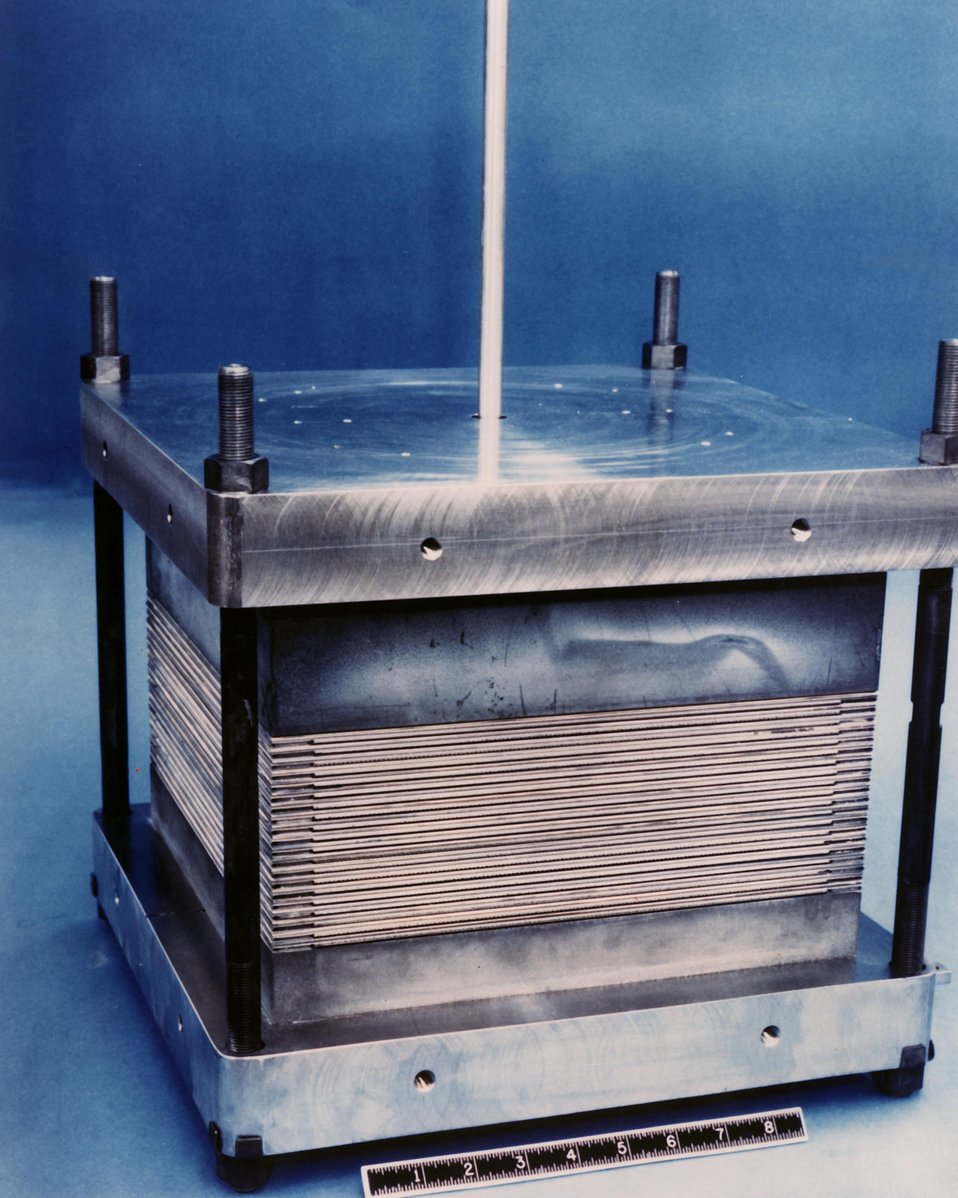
FUEL CELL AT NATIONAL ENERGY TECHNOLOGY LABORATORY.

THE NATIONAL ENERGY TECHNOLOGY LABORATORY IN WEST VIRGINIA HOUSES A DOE-SPONSORED FUEL CELL TEST UNIT. THE FUEL CELL UNIT IS ONE OF 46 NATURAL GAS-FIRED CELLS BUILT BY INTERNATIONAL FUEL CELLS CORP. THE TOOL-SHED SIZED POWER UNIT CAN PRODUCE UP TO 40 KILOWATTS OF ELECTRICITY. THE MORGANTOWN FUEL CELL UNIT OPERATES AS A 'COGENERATOR' OF BOTH HEAT AND ELECTRICITY. THE FUEL CELL CAN CONVERT NEARLY 80 PERCENT OF THE FUEL VALUE OF THE INCOMING NATURAL GAS INTO USABLE ENERGY - AN EFFICIENCY MORE THAN TWICE THAT OF A CONVENTIONAL COAL-BURNING PLANT. THE 11,000 POUND POWER PLANT IS OPERATED BY A STACK OF 270 INDIVIDUAL CELLS. EACH CELL USES AN ELECTROCHEMICAL PROCESS TO COMBINE HYDROGEN FROM THE NATURAL GAS WITH OXYGEN FROM THE AIR TO PRODUCE ELECTRICITY. STEAM IS PRODUCED AS A BYPRODUCT OF THE PROCESS. DIRECT CURRENT FROM THE POWER STATION IS CONVERTED INTO ALTERNATING CURRENT AND USED IN THE MORGAN TOWN FACILITY'S OFFICE BUILDINGS.